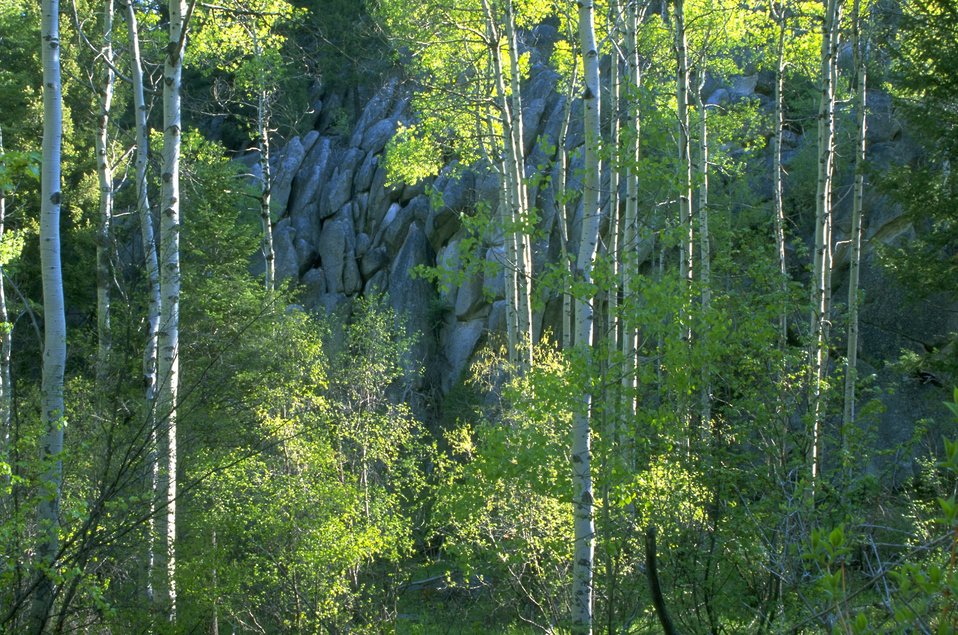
Rock formations and Aspen trees